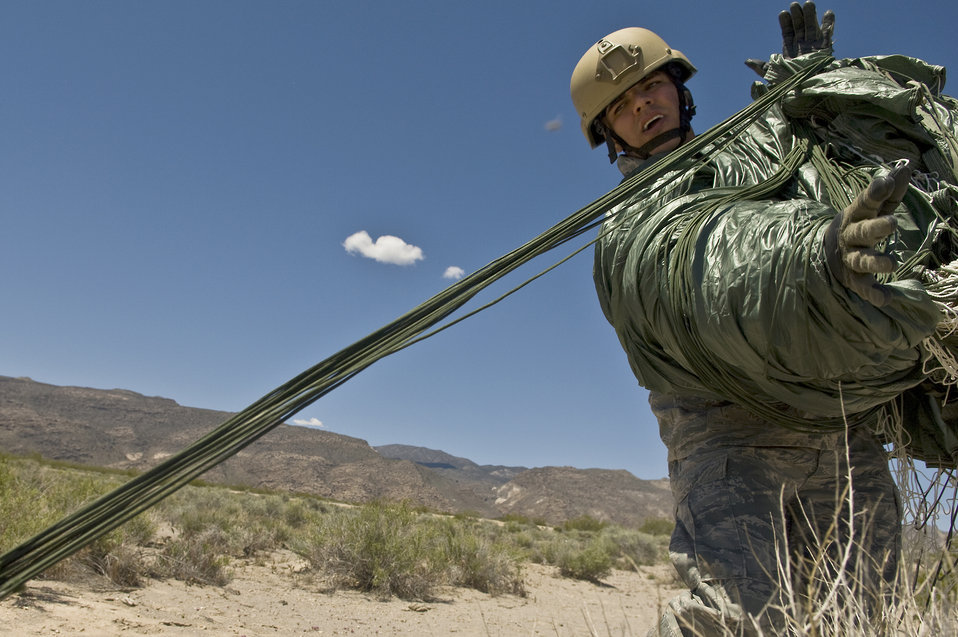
RED HORSE airborne flight

Tech. Sgt. Philip McAlpin packs up his parachute after landing from an air jump May 12, 2011, near Alamo, Nev. Sergeant McAlpin is an equipment operator craftsman assigned to the 820th RED HORSE Squadron.